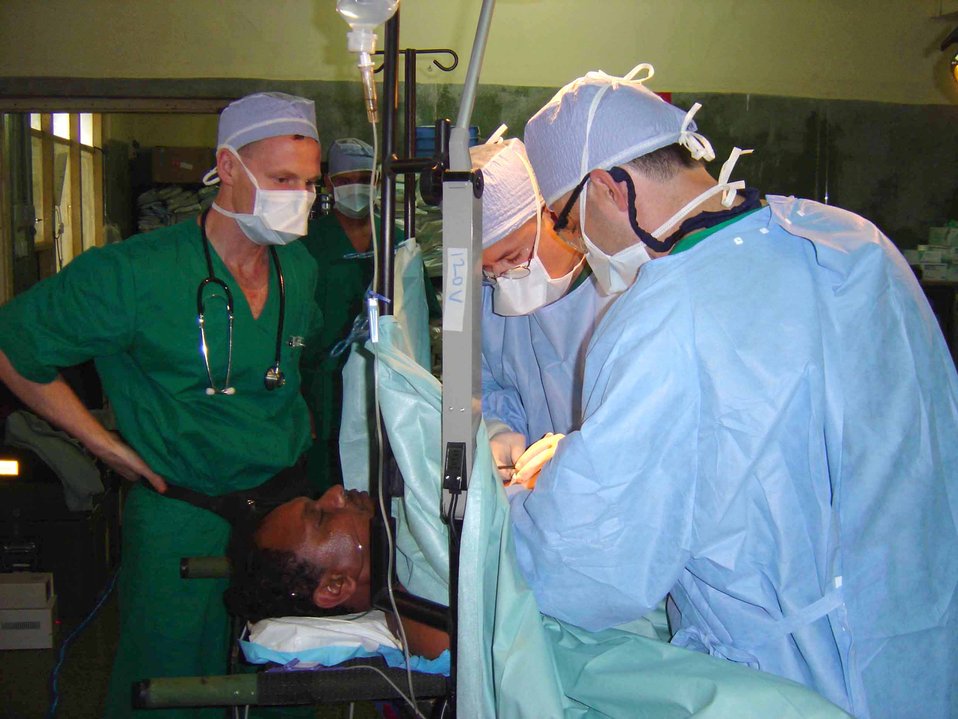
BRAVA team

JAFFNA, Sri Lanka -- Maj. Troy Osborn (left) monitors a Sri Lankan patient's vital signs as Army Majs. (Drs.) Ryan Moon (center) and Philip Woodworth operate April 27. Major Osborn is the 374th medical group anesthesia department medical director at Yokota Air Base, Japan. Dr. Moon is a general surgeon and commander of the 135th Field Surgical Team at Yongsan Army Garrison, South Korea. Dr. Woodworth is also a general surgeon with the 127th FST at Yongsan. The medical specialists are here as part of a humanitarian surgical training mission, which continues through May 2.